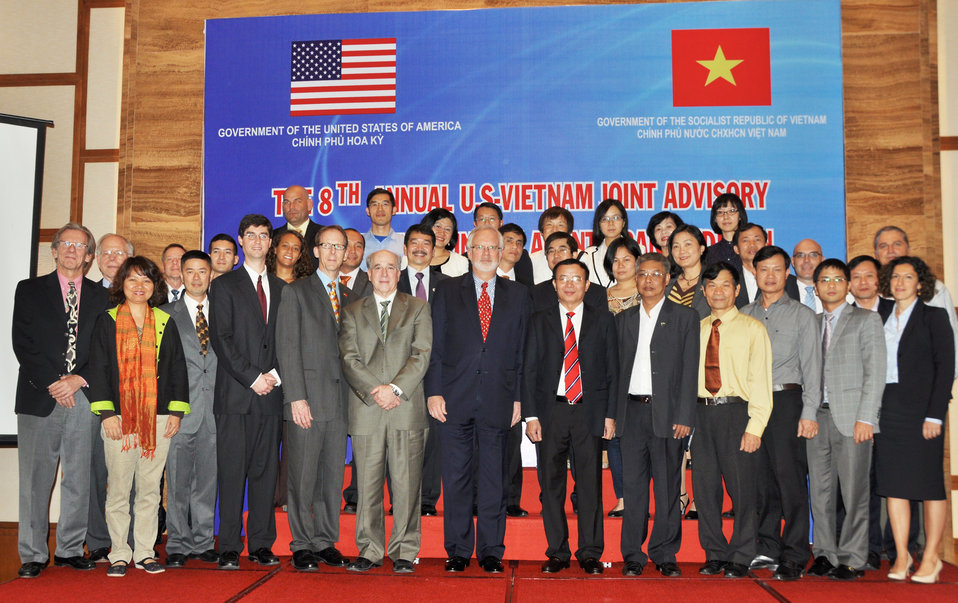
8th Annual JAC Participants

Danang, December 4, 2013.